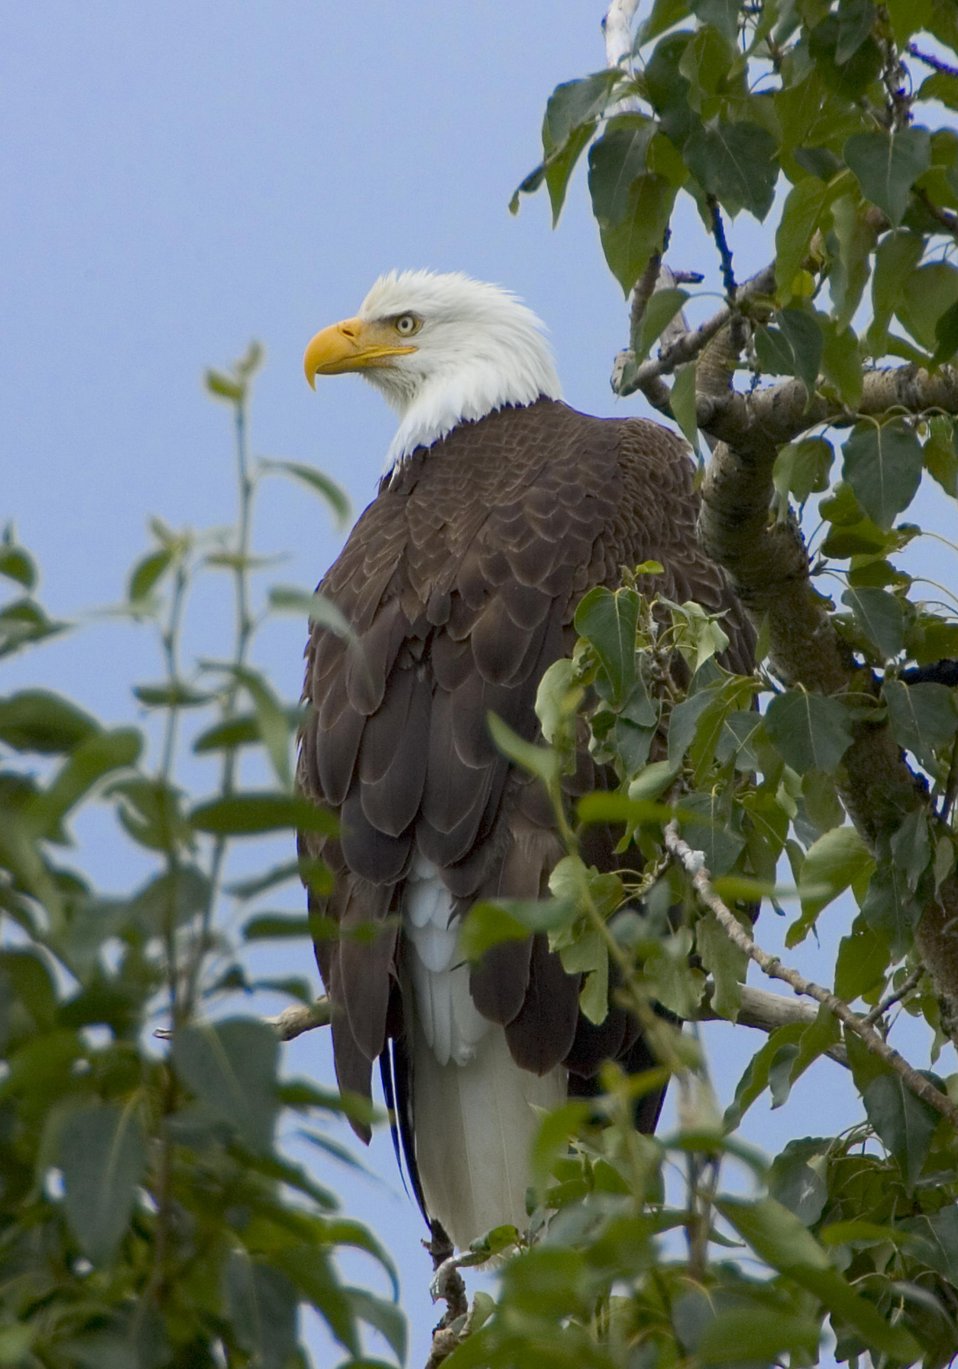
Wildlife of Kodiak Refuge

Bald Eagle